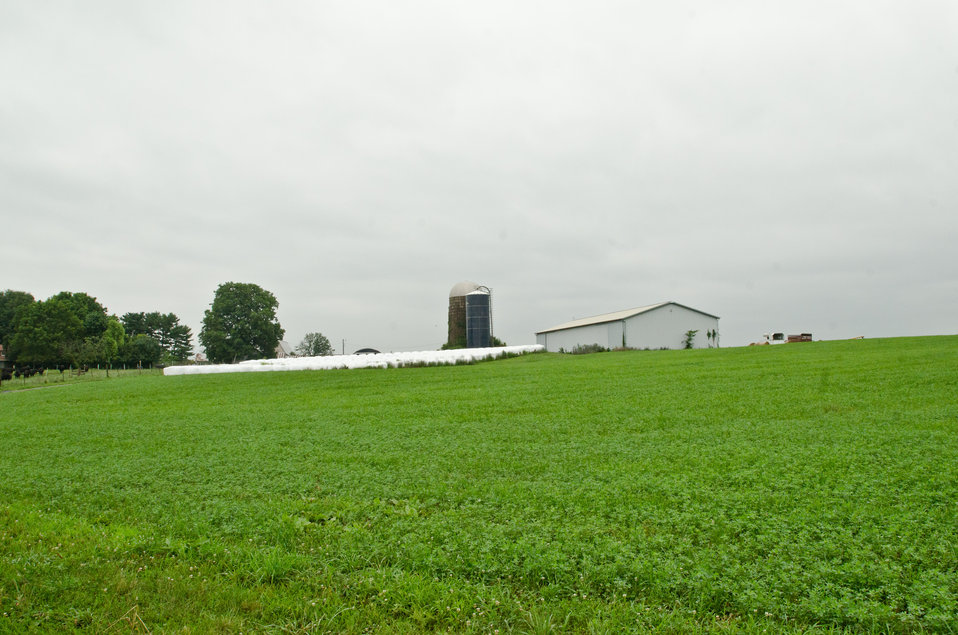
Nick’s Organic Farm, in Adamstown, MD, on Friday, July 12, 2013. The farm, owned by Nick Maravell, produces Black Angus beef, chicken, turkey, eggs, hay, soybeans, corn, alfalfa, orchard grass, rye; and other crops. The cattle are100% grass-fed receiving certified organic pasture, certified organic hay (in winter), water and mineral salts mixed with sea kelp. The cattle are not fed hormones, antibiotics or animal products. Poultry feed from grain is ground from organic grain. The poultry also graze on organic pastures. The farm has conducted on-farm research with federal, state and non-profit agencies to refine organic practices.